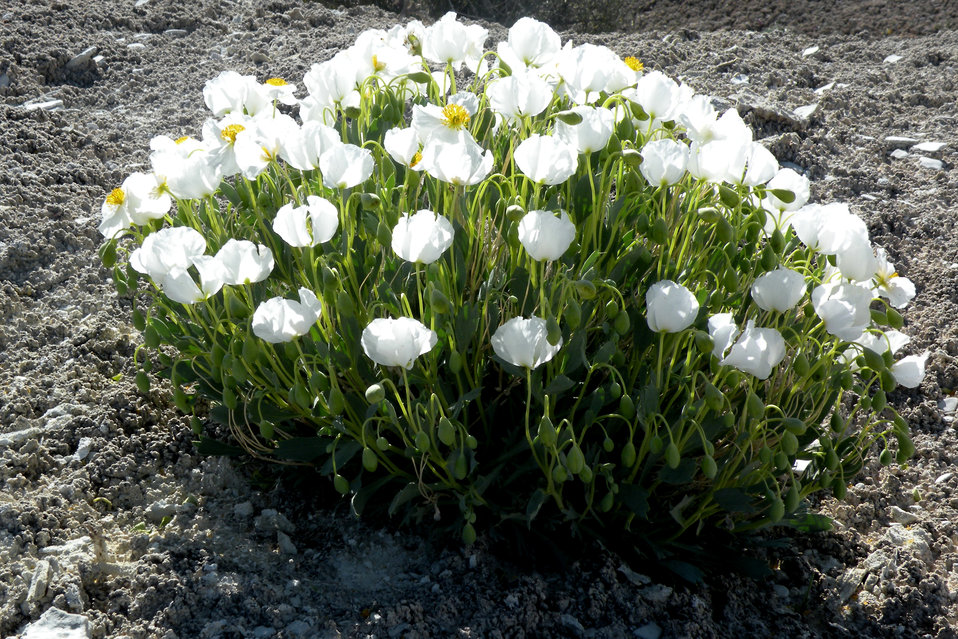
Dwarf Bearclaw Poppy (Arctomecon Humils)

The dwarf bearclaw poppy is endemic to Washington County, UT. It is restricted to clay soils of the Moenkopi Formation. It occurs on rolling hills and bluffs in sparsely-vegetated desert shrub communities between 2,700 ft. and 3,330 ft. in elevation. It is listed endangered